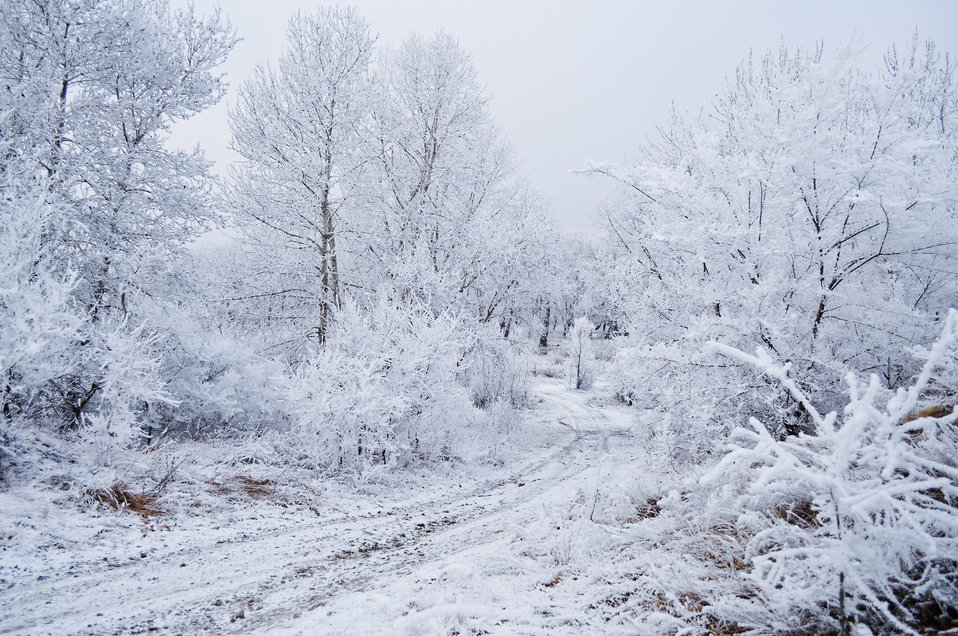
Trees in the snow.